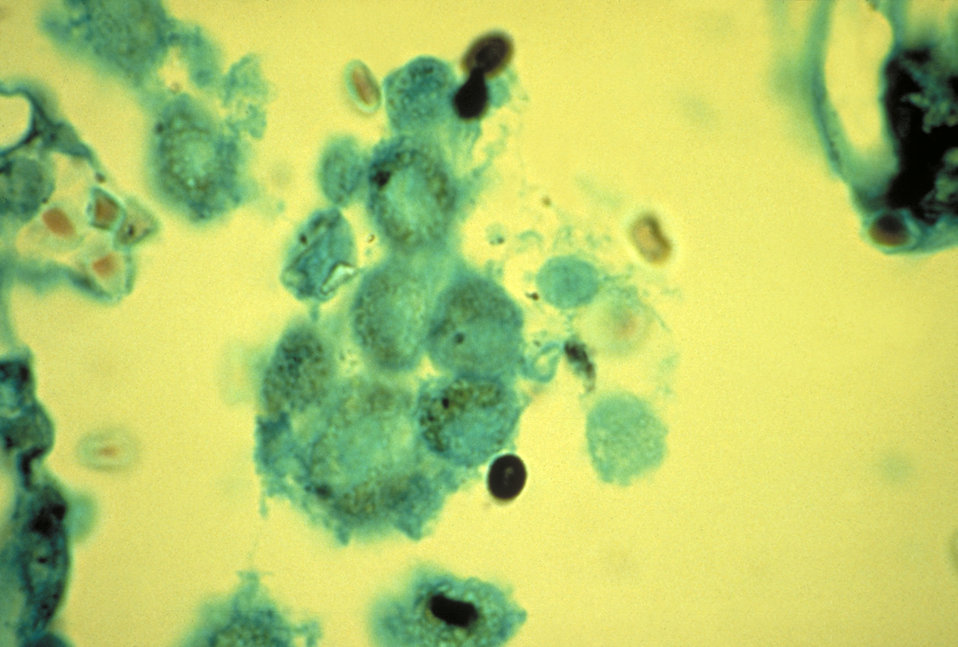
Needle aspiration biopsy of lung showing yeasts of Histoplasma capsulatum. Methenamine silver stain.